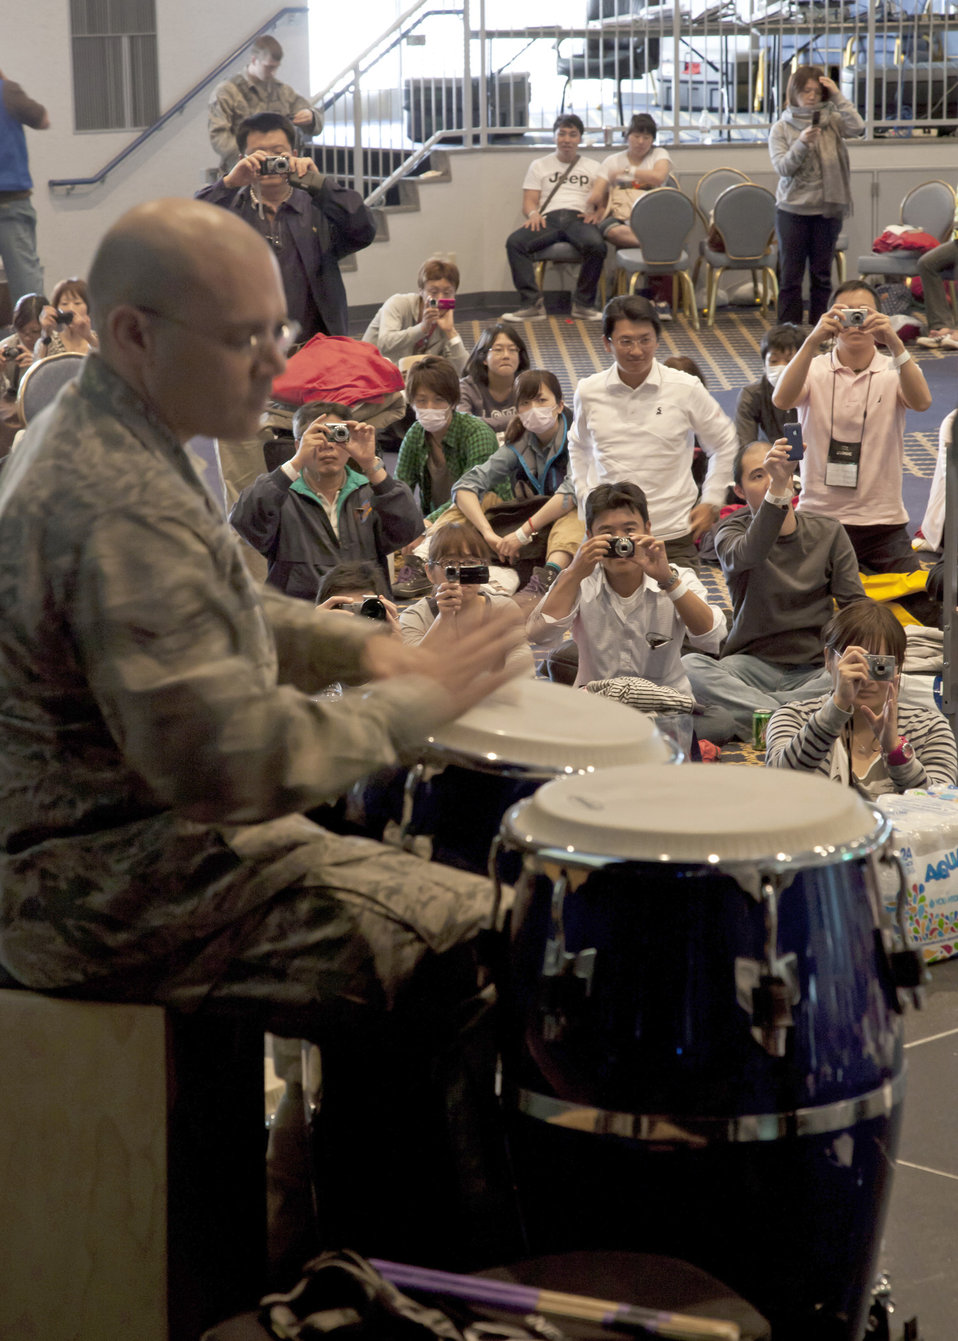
community center at Yokota Air Base, Japan,

Staff Sgt. Anthony Schmaus, U.S. Air Force Band of the Pacific, performs on stage for passengers diverted from Narita International Airport inside the community center at Yokota Air Base, Japan, March 11, 2011. The jazz combo entertained passengers who stayed overnight as a result of the earthquake in Tokyo.